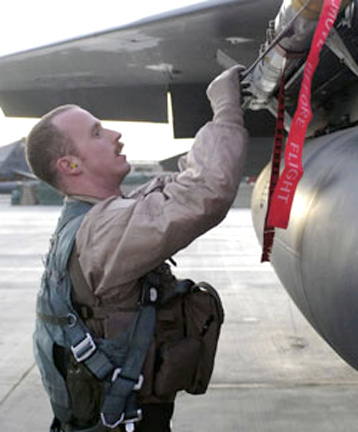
Jabara Award

Capt. Michael Polidor conducts a pre-flight inspection on an F-15E Strike Eagle Nov. 24, 2009, at Bagram Airfield, Afghanistan. Captain Polidor, a 2004 Air Force Academy graduate, was selected to receive the Col. James Jabara Airmanship Award by the Academy, the Association of Graduates and the Jabara family.